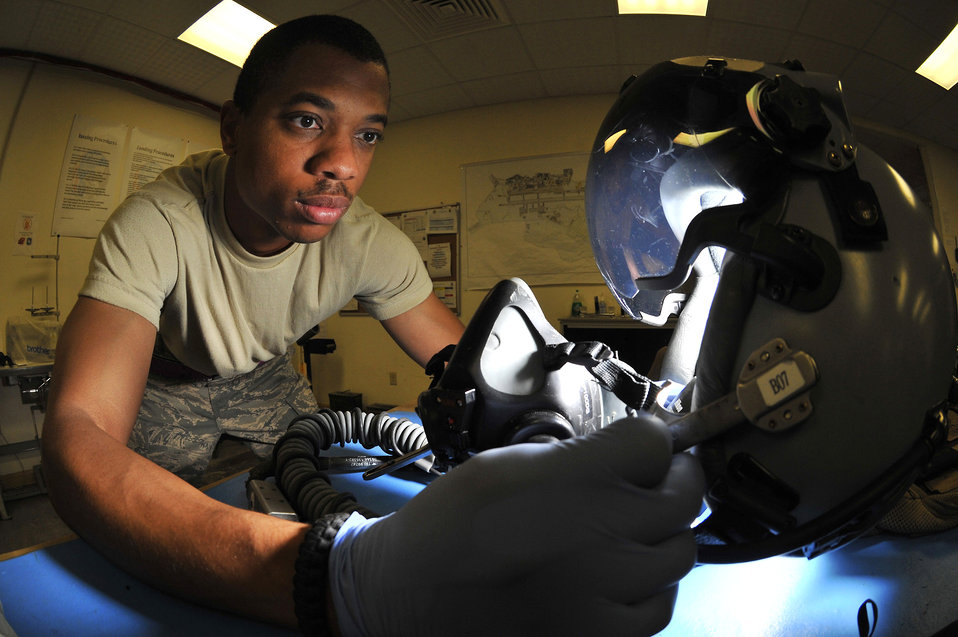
This one checks out...

Staff Sgt. Courtney Martin, an aircrew flight equipment technician assigned to the 510th Expeditionary Fighter Squadron at Bagram Airfield, Afghanistan, performs a preflight inspection of a helmet Sept. 2, 2010.